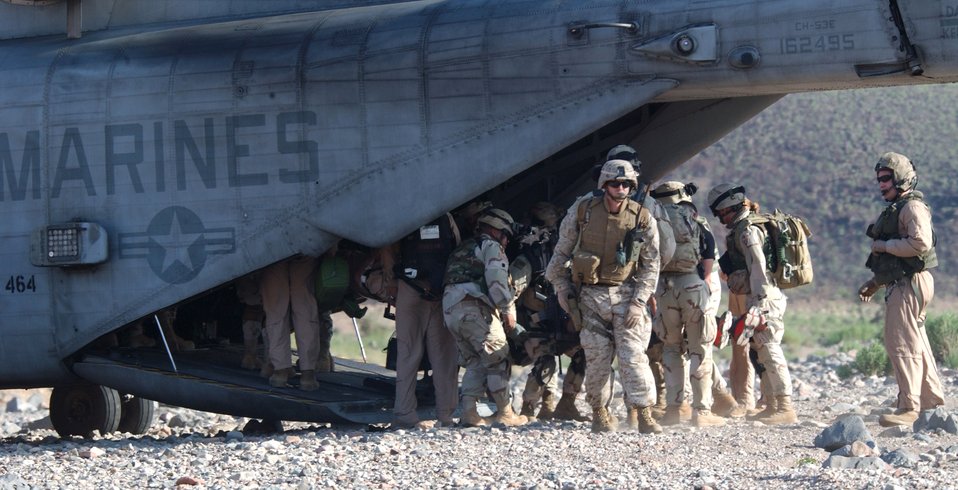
Rescue exercise

CAMP LEMONIER, DJIBOUTI, Africa (AFPN) -- Air Force pararescuemen and Marines from the Force Protection Company carry a simulated patient to a Marine CH-53 Super Stallion helicopter during a rescue exercise. The Airmen are with the 304th Pararescue Squadron.